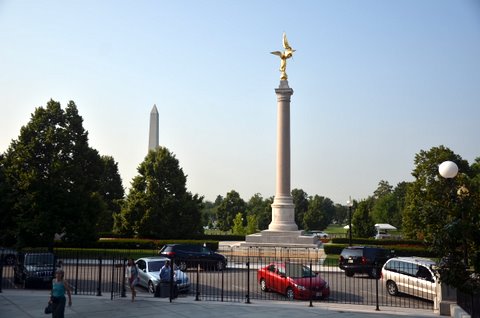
Facing The Ellipse

WH 2012 World Hepatitis Day Event